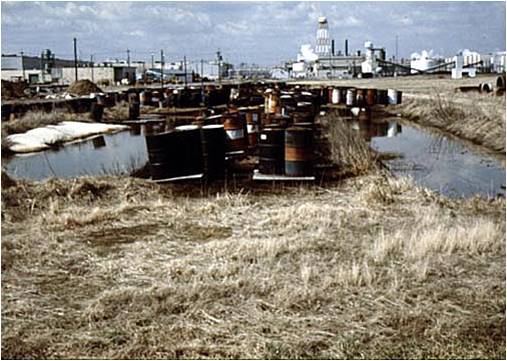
Old Oil Landfarm: The oil landfarm was used from 1973-1979 to biodegrade waste oils by mixing them with lime and fertilizer.